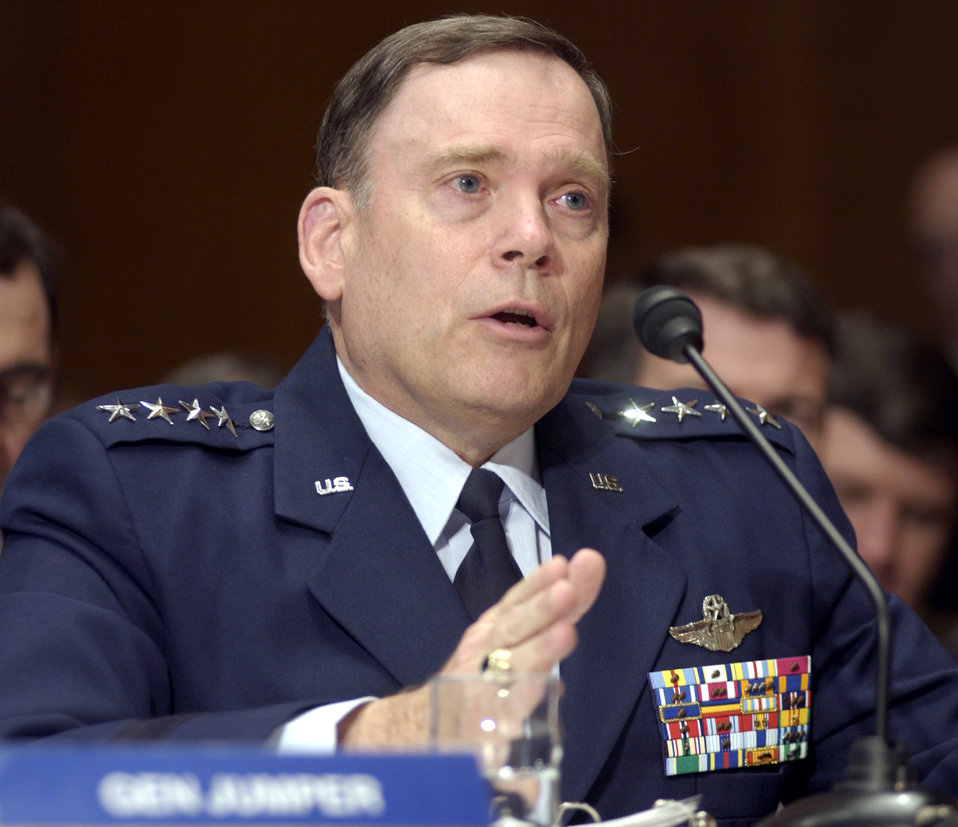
Jumper

WASHINGTON -- Air Force Chief of Staff Gen. John P. Jumper told members of the Senate Appropriations Committee subcommittee on defense March 26 that the U.S.-led coalition has achieved total air dominance in the skies over Iraq.